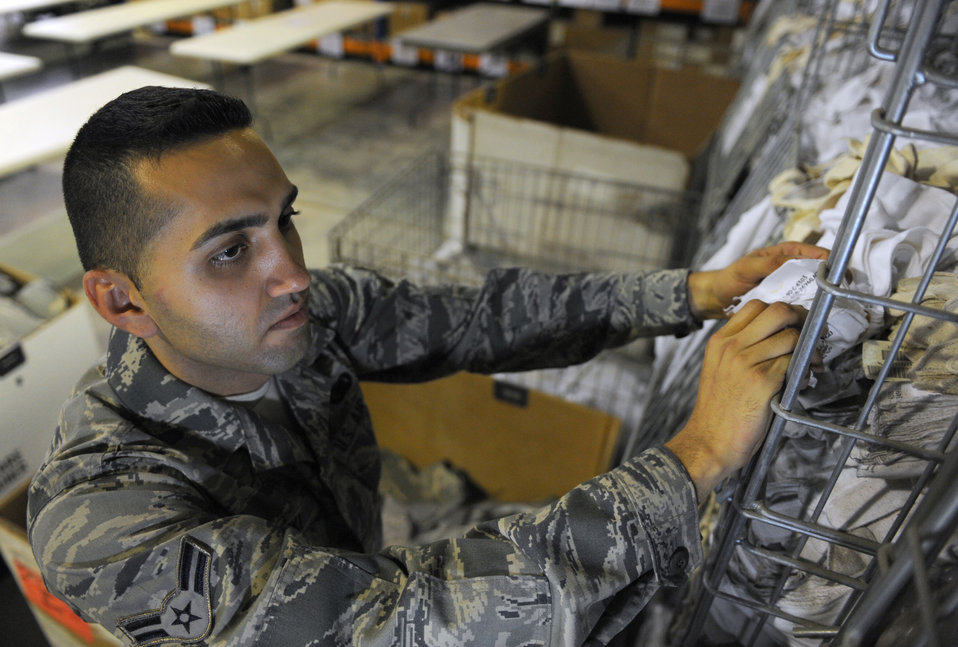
Supply Airman provides deployed troops with more than just equipment

Airman 1st Class Miad Maleki grabs a pair of glove inserts from a shelf, Nov. 3, 2011, at the 380th Air Expeditionary Wing. Maleki, a native of Tehran, Iran, is a material management journeyman for the 380th Expeditionary Logistics Readiness Squadron. He issues, stores and maintains individual protective equipment, and is volunteering in his off time to teach a free Farsi class for the deployed troops at the wing.